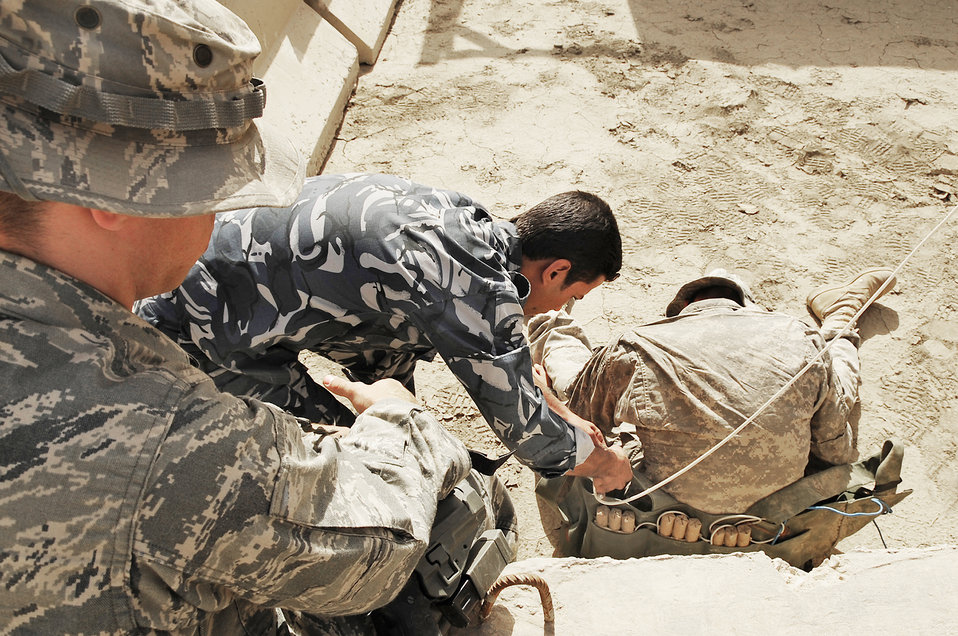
Airmen train Iraqi police

Senior Airman Kyle Gnuechtel observes and advises Iraqi police explosive ordnance disposal technicians as they safely remove a suicide bomber's vest during a training scenario conducted by Air Force EOD members Nov. 4, 2009, at Forward Operating Base Cedar, Iraq. Airman Gnuechtel is a 407th Expeditionary Civil Engineer Squadron EOD technician deployed from Dyess Air Force Base, Texas.